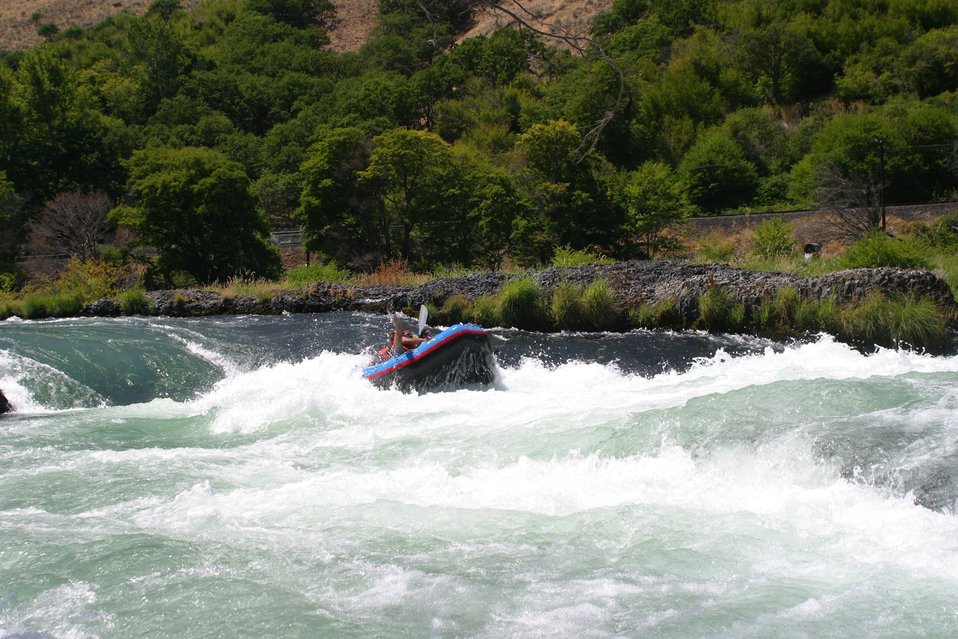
Oak Springs is a Class IV Rapids. The left channel has shallow rocks, large standing waves, turbulent currents and a large hole during high flows. The right channel has a large hole, shallow rocks, and turbulent currents. 7/26/03 Pelton Dam 3600 cfs: Moody Rapids 4300 cfs.